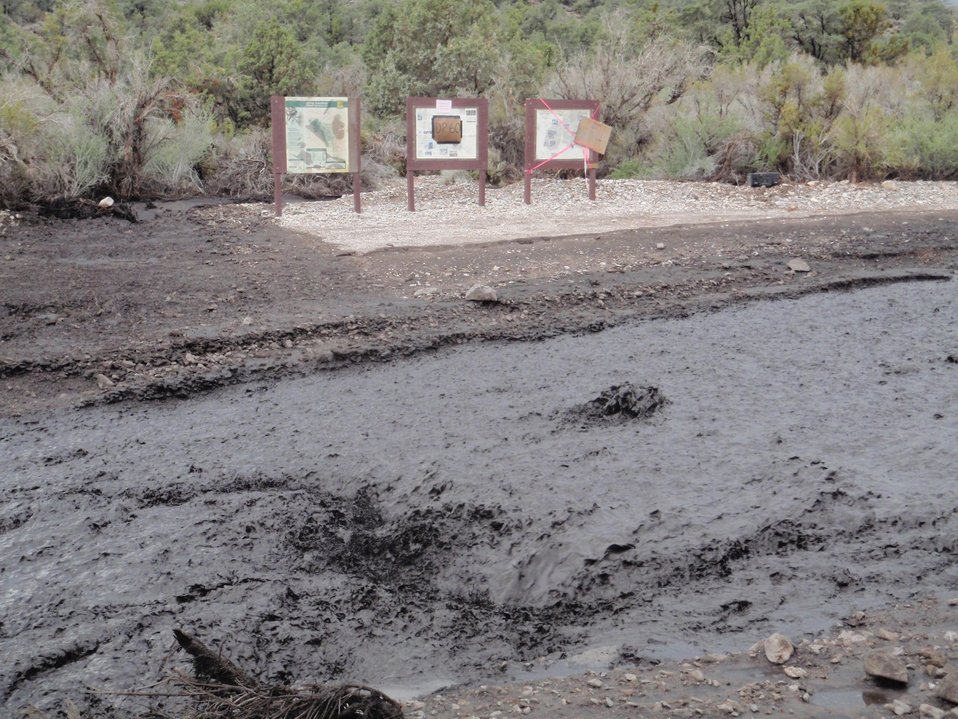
Mud flow on road to Prospect Springs in Toiyabe National Forest near Humboldt, NV. Vegetation destroyed by the Carpenter Fire causes mudflows that can cause even more damage. The Carpenter Fire in the Toiyabe National Forest near Humboldt, NV was caused by a lightning strike on Jul. 1, 2013. The fire has consumed nearly 27,881acres and is presently 70% contained.